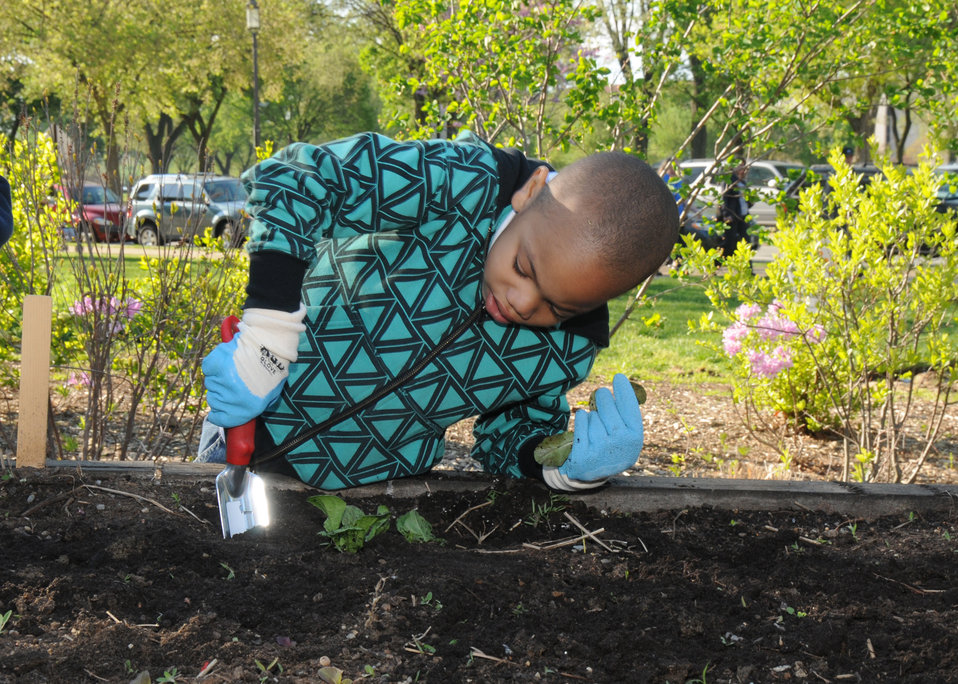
Young people from the non-profit Jubilee Housing organization’s after school youth services program help U.S. Department of Agriculture (USDA) employees plant vegetables and herbs in the People’s Garden on Friday, Apr. 9, 2010. The Jubilee Youth Services offers a safe place for learning and fellowship for young people through a supervised after-school program. The after-school program provides academic support, enrichment activities, healthy life skills, teen leadership development and community service opportunities. The young people at Jubilee Housing have their own garden on site. USDA photo 10di1300-169